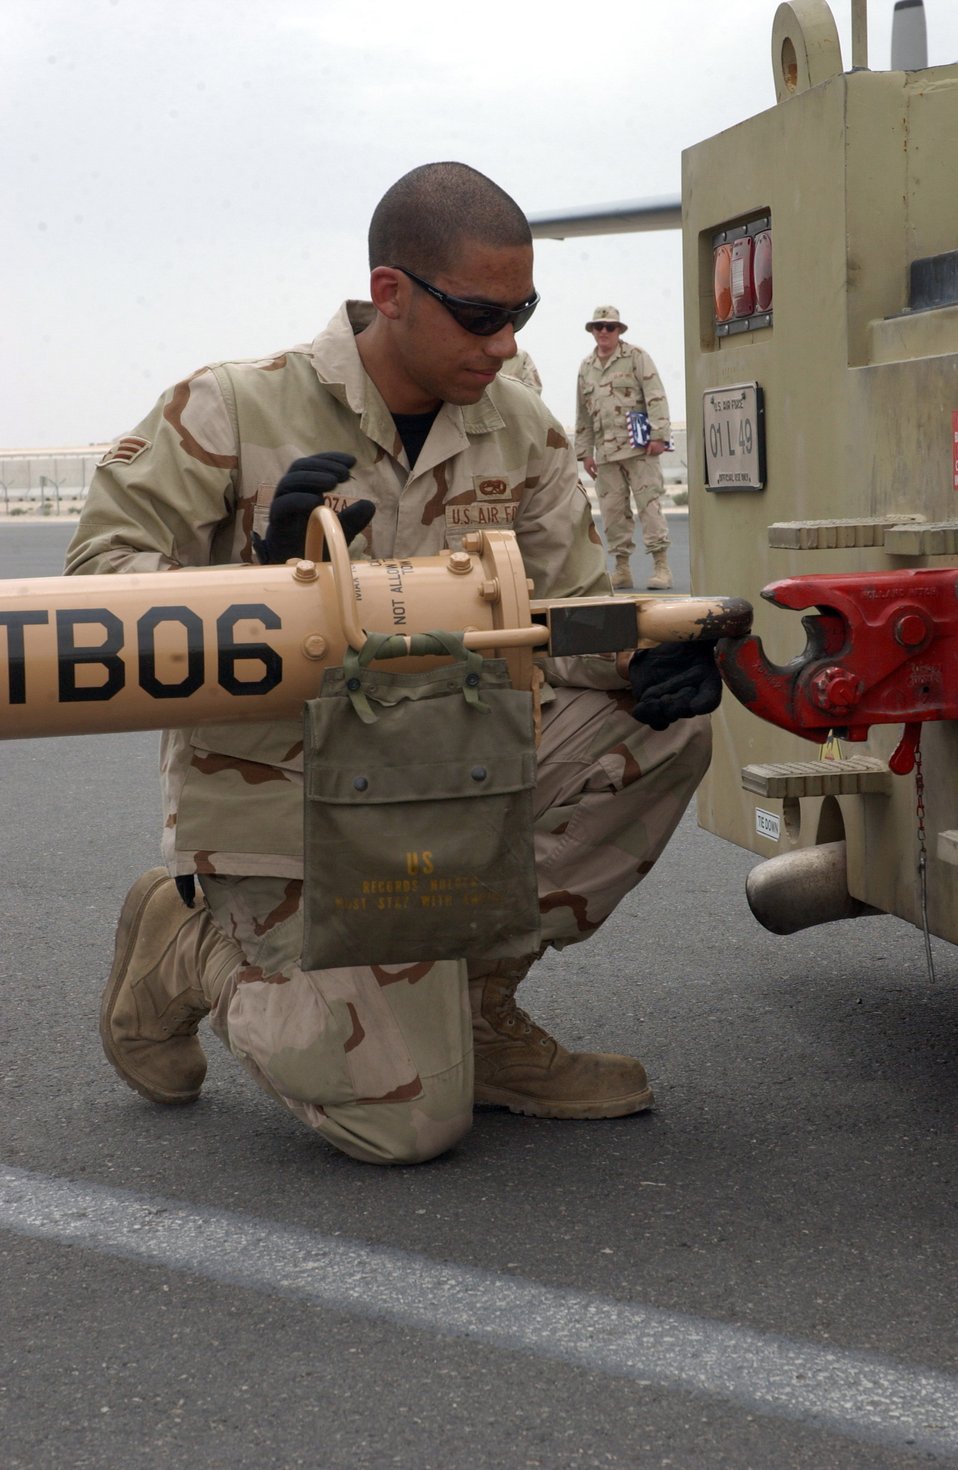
Herc operations

Senior Airman Saul Mendoza links a C-130J Hercules to an aircraft tow tractor at a deployed location in Southwest Asia on Wednesday, April 5, 2006. Airman Mendoza is with the 747th Aircraft Maintenance Unit.